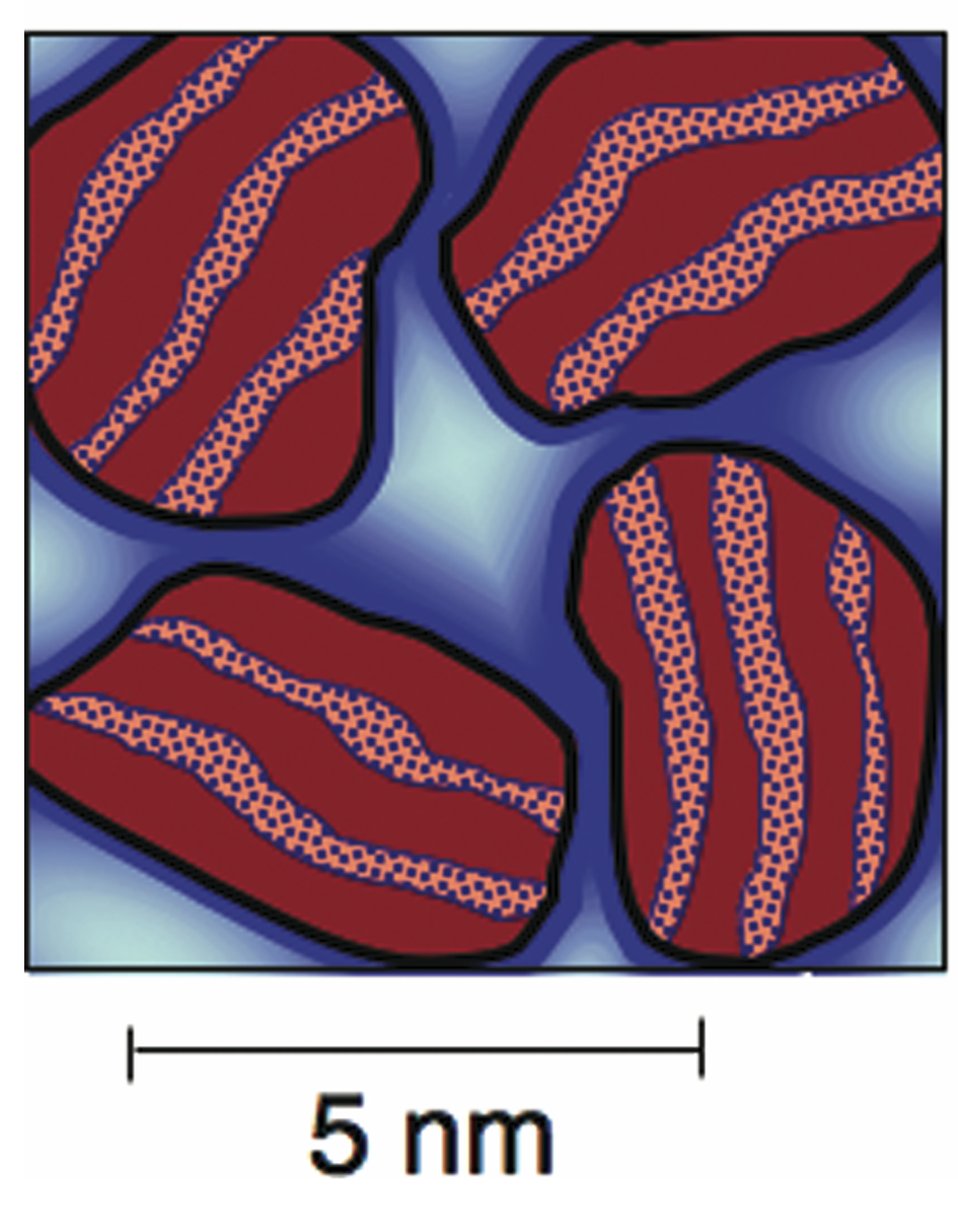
Novel Experiments on Cement Yield Concrete Results

Schematic drawing of nanoscale calcium silicate hydrate (C-S-H) particles in cement showing the multiple roles played by water as defined in the NIST/Northwestern experiments. Solid red areas are calcium silicate, pebbled areas in between show the water physically bound between the layers to form solid C-S-H. Dark blue halos around the C-S-H particles are water chemically adsorbed on the surface, pale blue areas represent liquid water caught in nanopores.